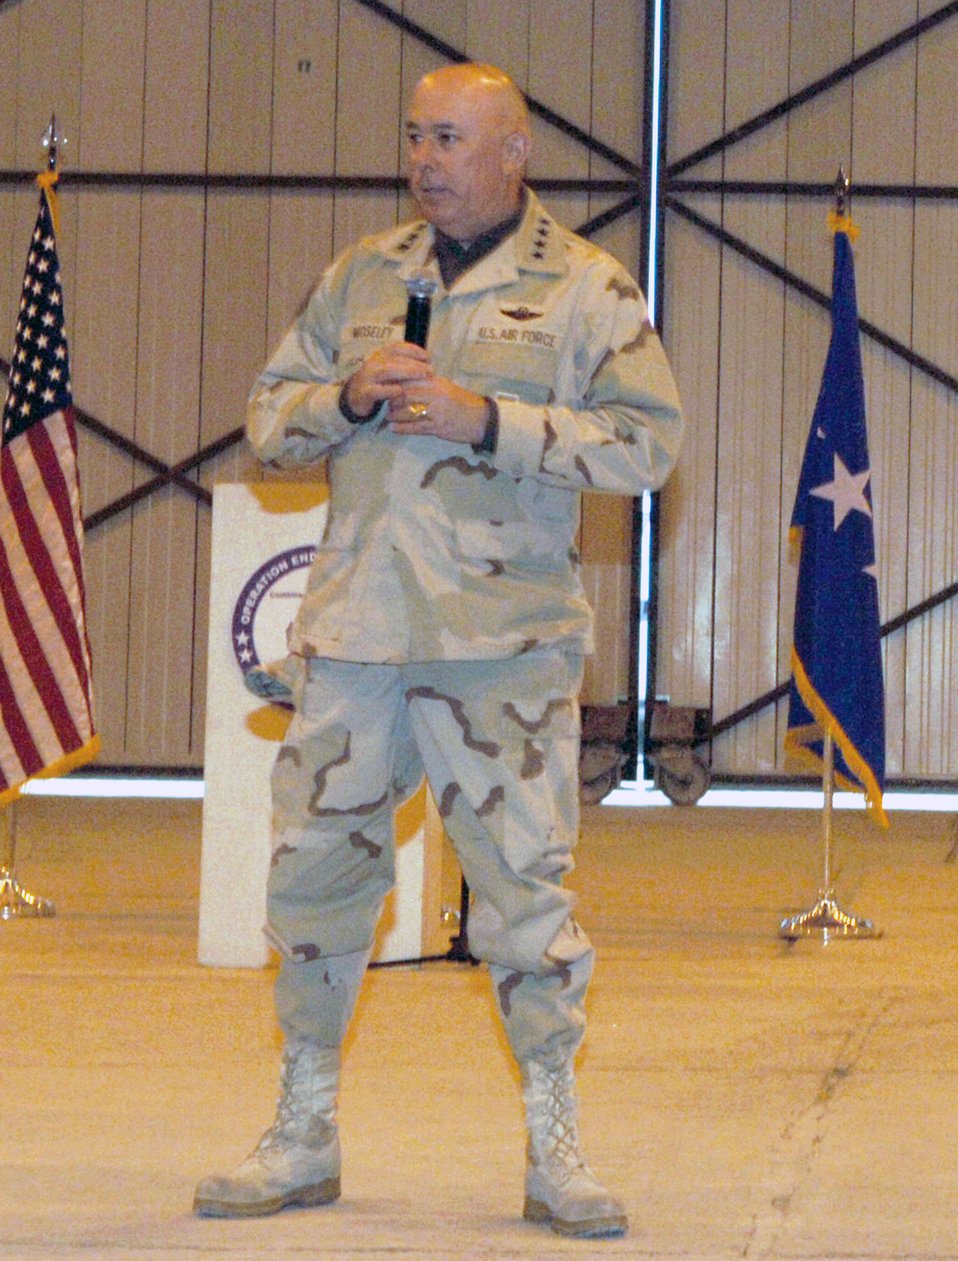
CSAF visits Bagram

Air Force Chief of Staff Gen. T. Michael Moseley answers questions during an Airmen's call at Bagram Airfield, Afghanistan, Feb. 2. The general stopped at Bagram and Kandahar airfields during a tour of Afghanistan.